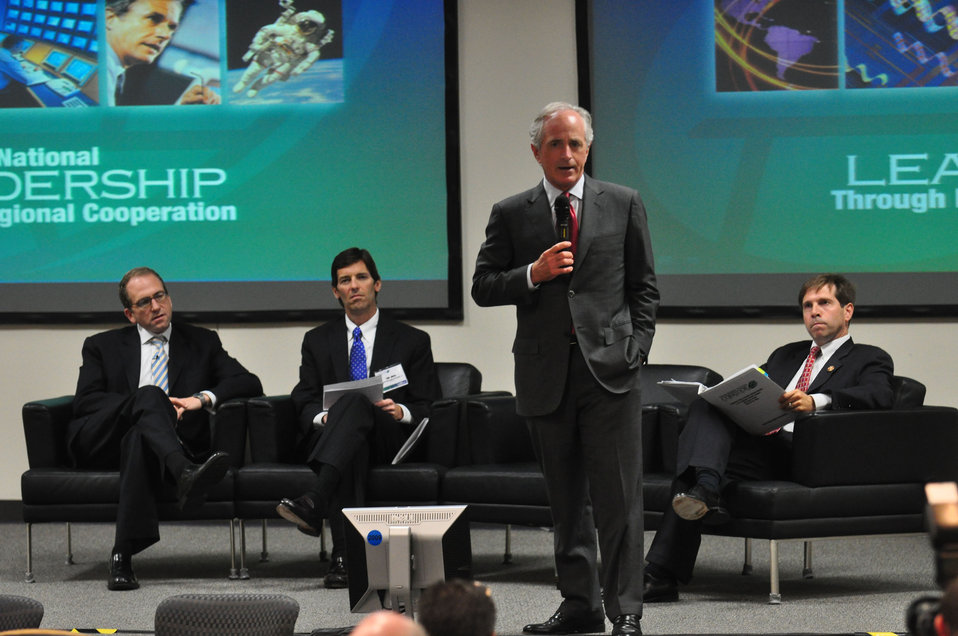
Tennessee Valley Corridor Summit Oak Ridge

13-062 DOE photo Lynn Freeny 5-29-2013 Oak Ridge Tennessee